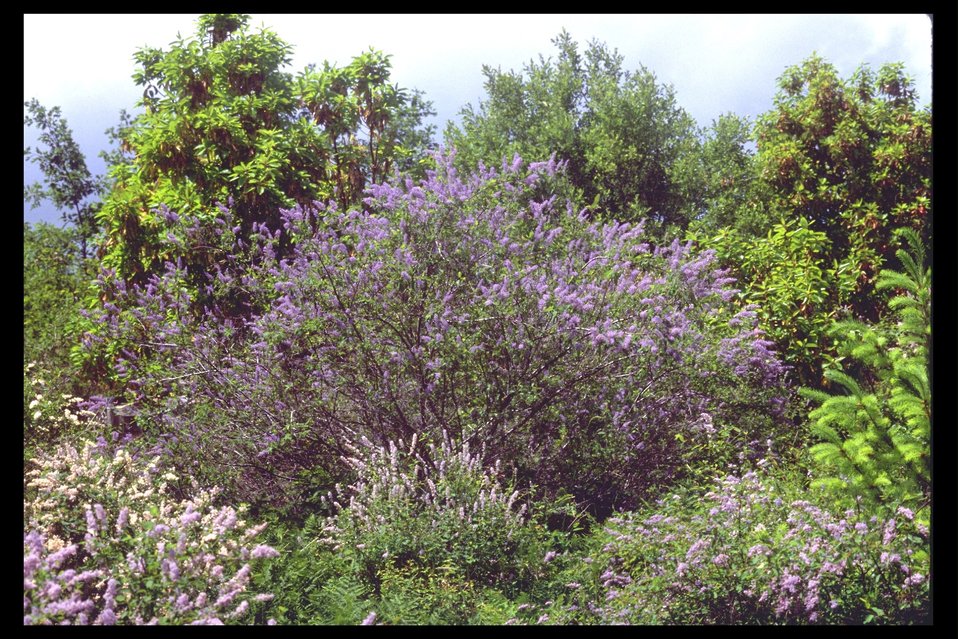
Deerbrush (Ceanothus integerrimus) at Upper Trail Creek.